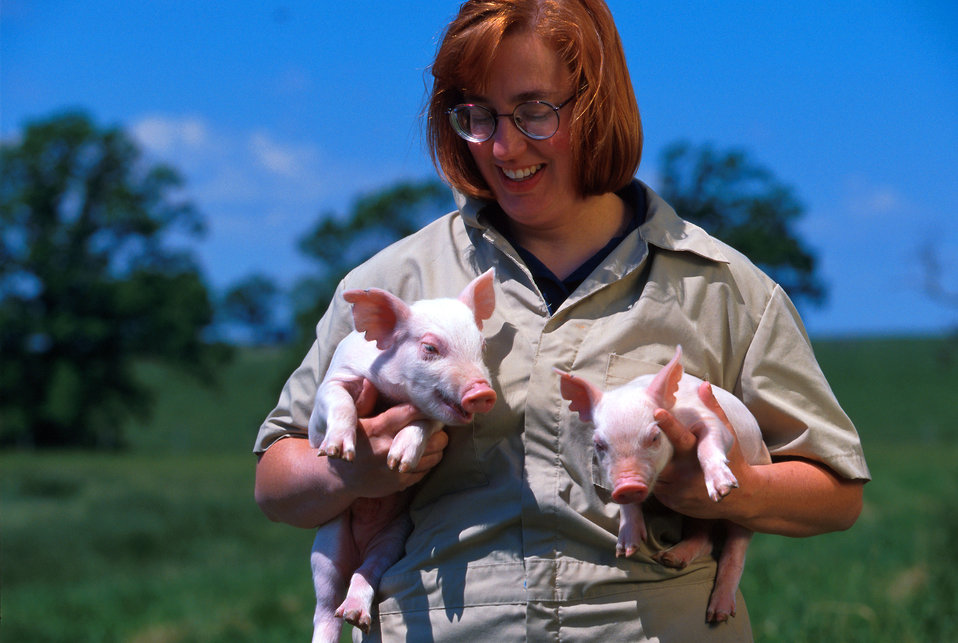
U.S. Department of Agriculrure (USDA), Agriculture Research Service (ARS) animal physiologist Cheryl Dyer observes healthy, 10-day-old piglets.